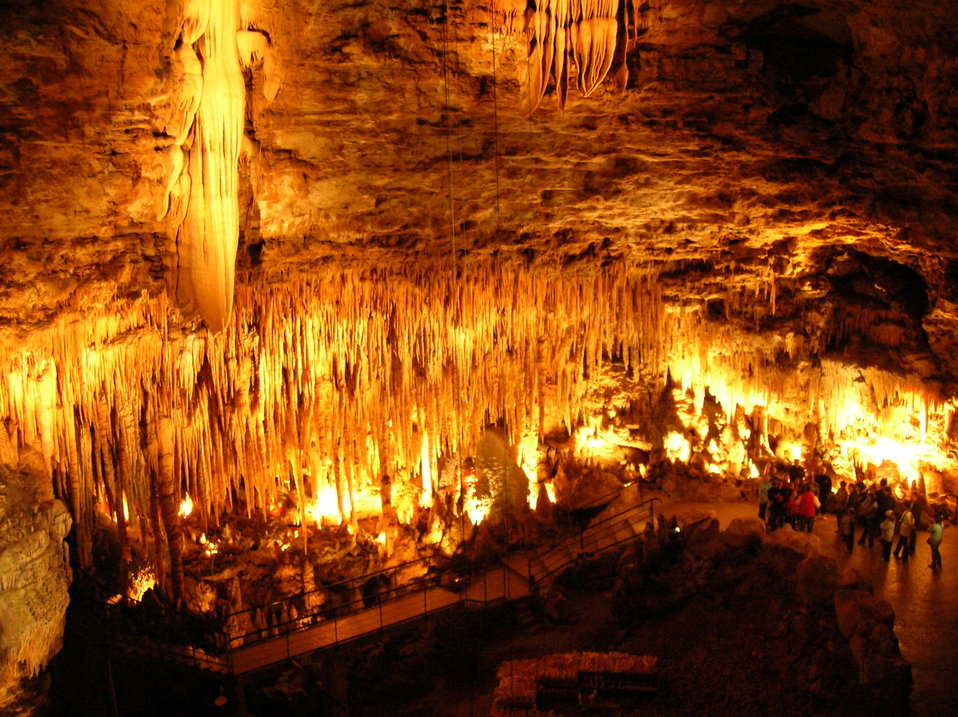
Concretions in the cave of Proumeyssac (P√©rigord, France). (NB:photo taken without flash in order to respect the place) Fran√ßais†: Concr√©tions dans le gouffre de Proumeyssac (P√©rigord, France). (NB:photo prise sans flash dans le but de respecter l'endroit)